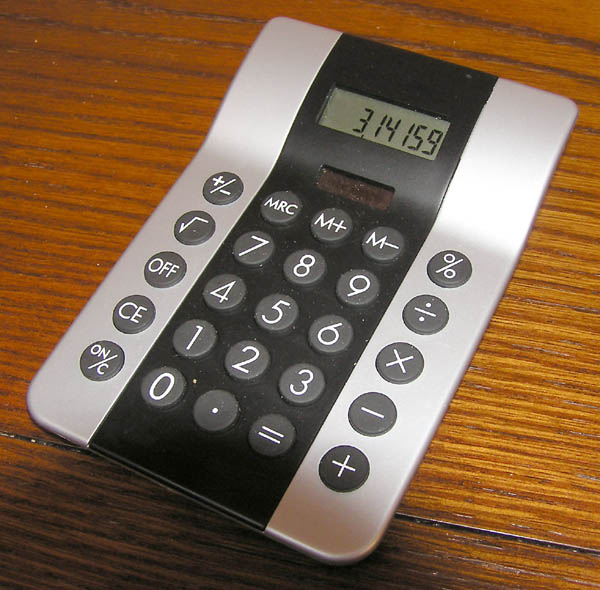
Calculator.arp.600pix